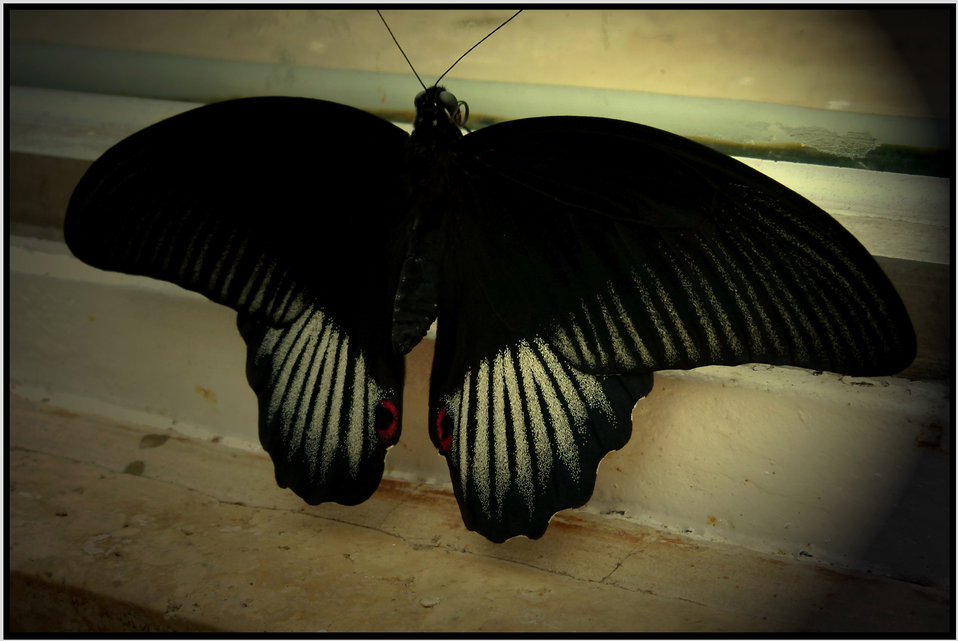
Butterfly

Black butterfly.